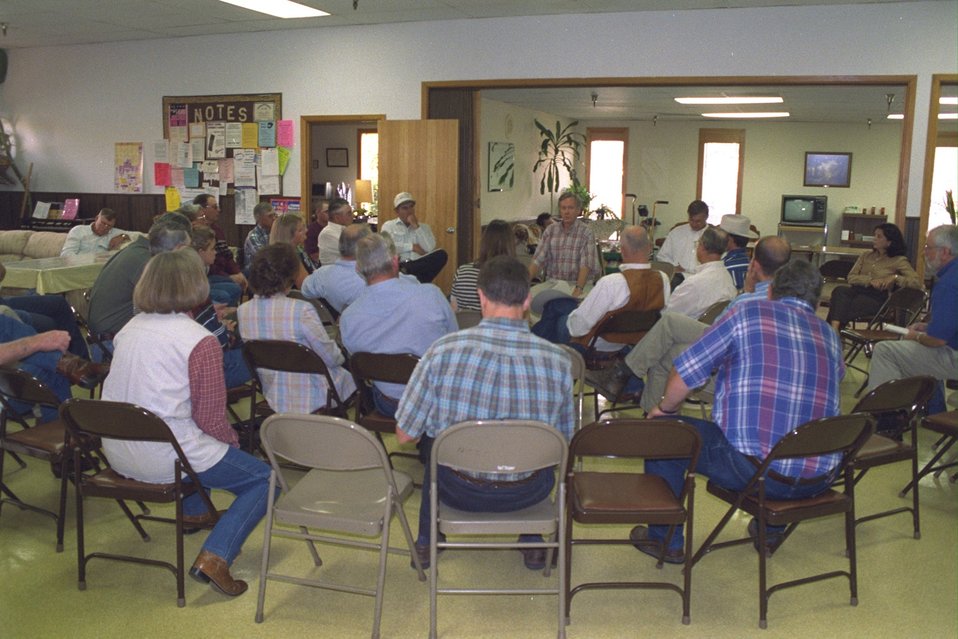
Town meeting to discuss Steens designation with Secretary Babbitt in Burns, OR.